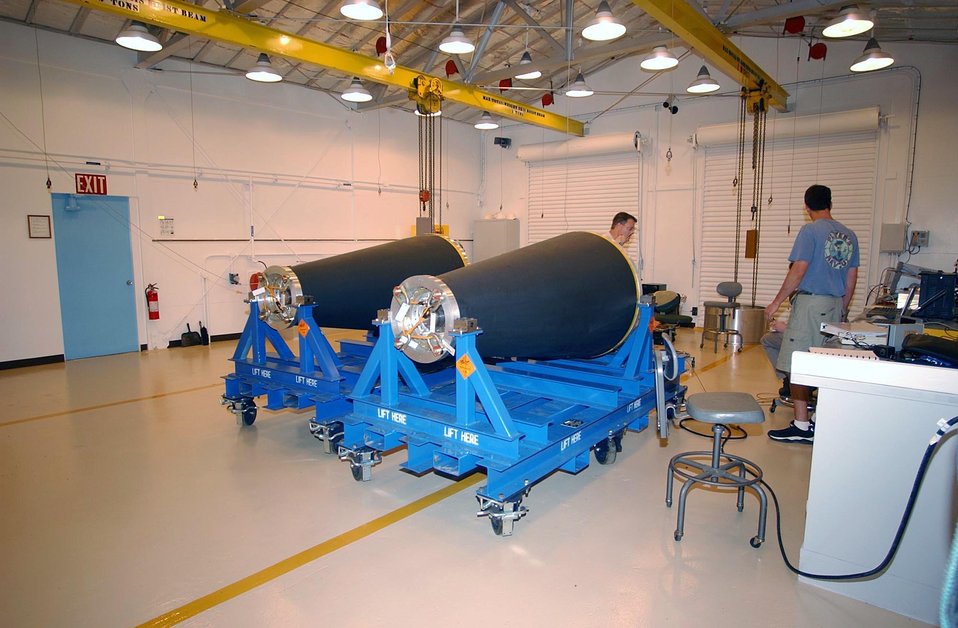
TEST ROCKET PREPARATION IN A MISSILE ASSEMBLY ROOM.

SANDIA'S KAUAI TEST FACILITY, OPERATED FOR DOE, IS ON THE U.S. NAVY'S PACIFIC MISSILE RANGE FACILITY ON THE ISLAND OF KAUAI, HAWAII. SINCE 1962 SANDIA HAS SENT SCIENTISTS AND TECHNICIANS TO CONDUCT ROCKET FLIGHT TEST EXPERIMENTS RANGING FROM OFFENSIVE AND DEFENSIVE WEAPONS TESTING TO ATMOSPHERIC STUDIES AND HIGH TECH STAR GAZING.